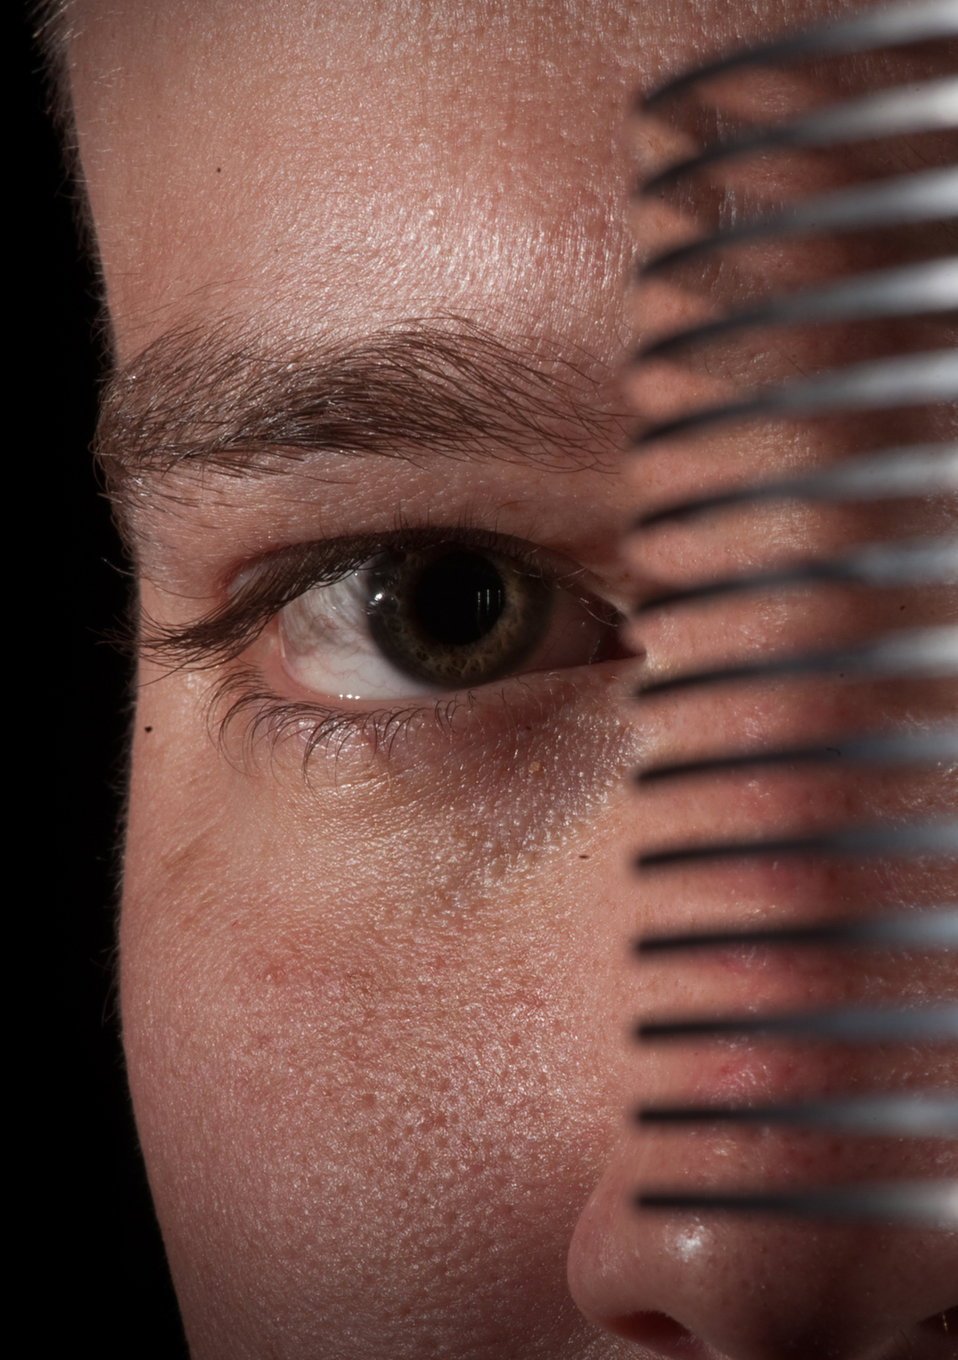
A close look at DoD Cyber Crime Center

Jon Beasley peers through a disk platter stack Sept. 9, 2010, at the Defense Computer Forensic Laboratory in Linthicum, Md. Mr. Beasley is an image and extraction technician who makes disk images of computer memory storage devices.